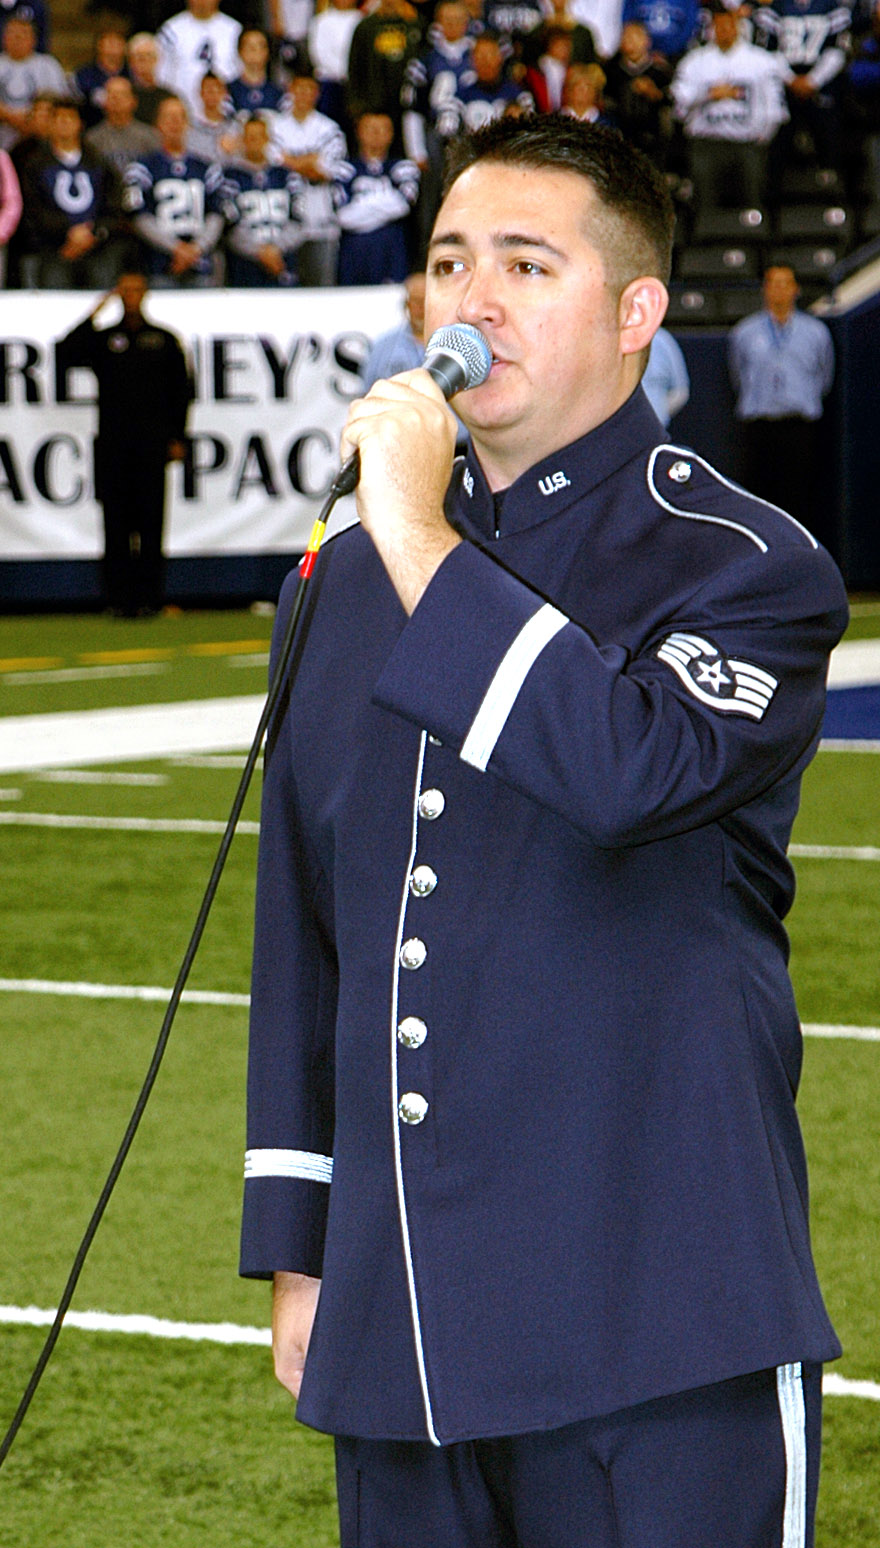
Air Force presents top civic award to Indianapolis Colts

Staff Sgt. Justin Allen sings the national anthem before the Indianapolis Colts vs. Kansas City Chiefs National Football game Nov. 18 in Indianapolis. The Colts received the prestigious American Spirit Award before the start of the game. Sergeant Allen is a member of the Air Force Band of Flight.